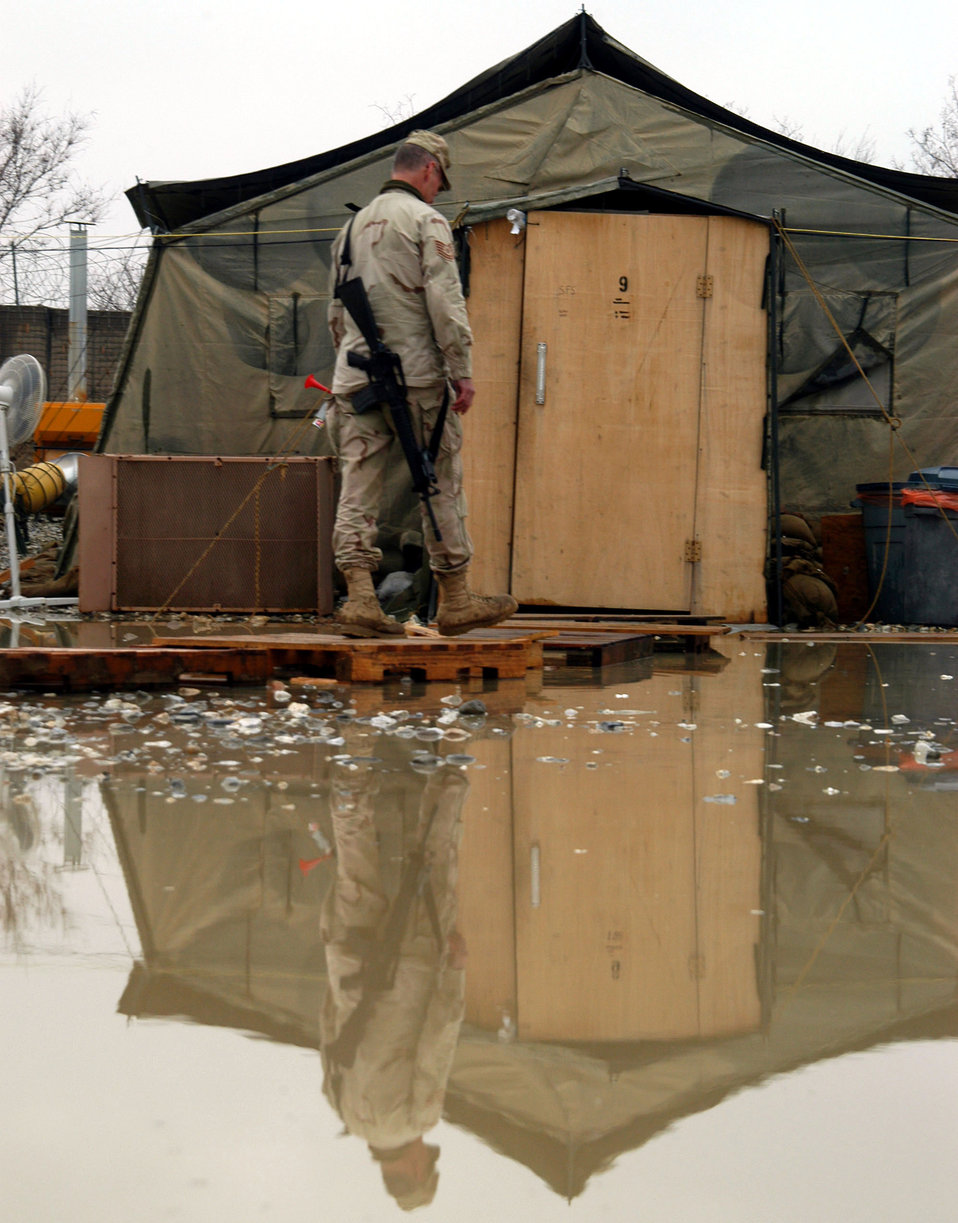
A puddle runs through it

OPERATION ENDURING FREEDOM (AFPN) -- Tech. Sgt. Ralph Zarker walks by a gigantic water puddle on the way to his tent in Air Force Village at Bagram Air Base, Afghanistan. Melting snow produced puddles throughout the base. Zarker is a security forces nightshift supervisor with the 455th Expeditionary Operations Group and is normally assigned to the 824th Security Forces Squadron at Moody Air Force Base, Ga.